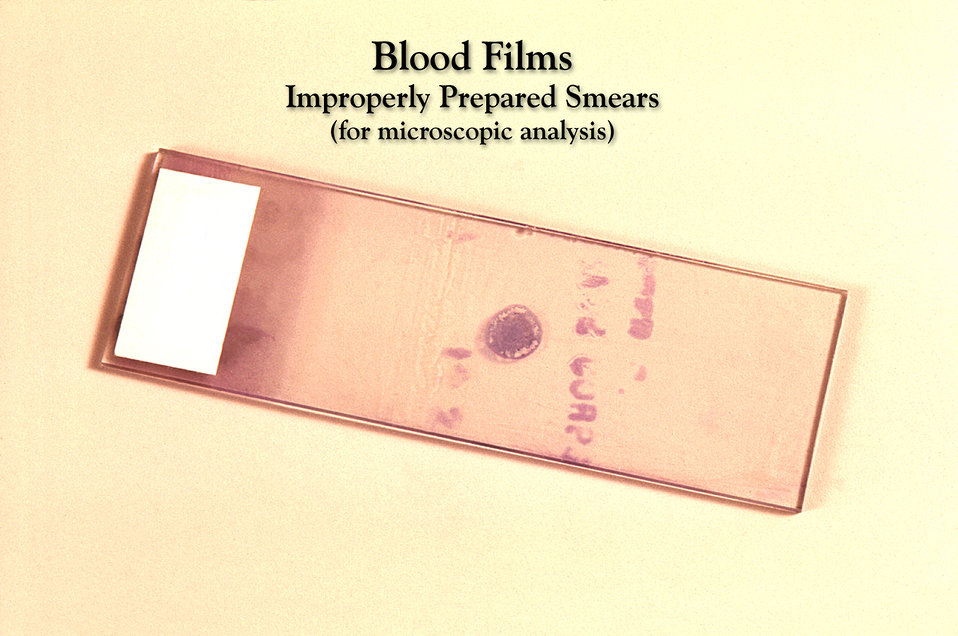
Poor film preparation technique yielded an unfavorable result in this Giemsa stained slide specimen.